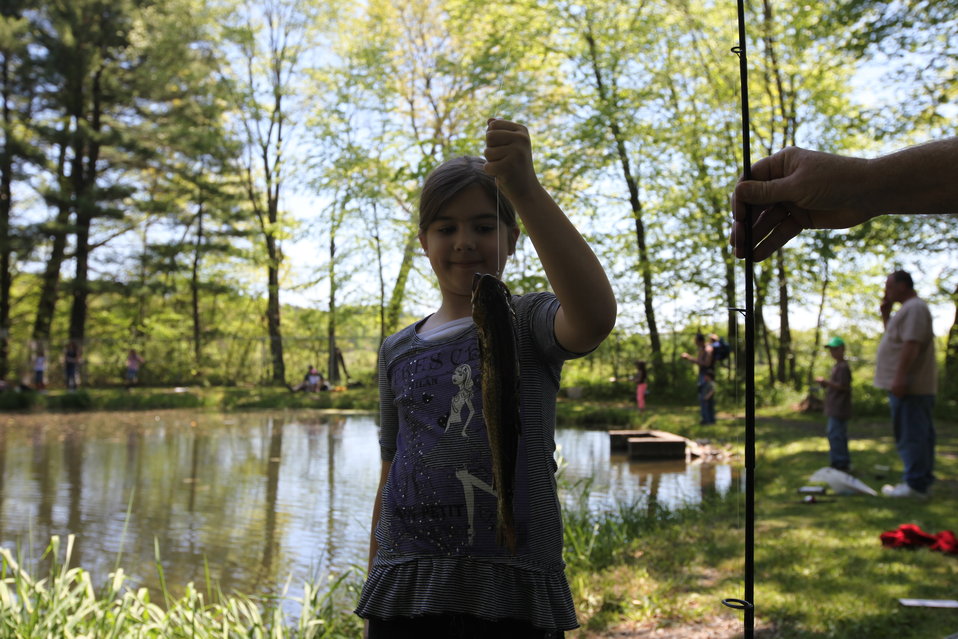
Youth Fishing Derby 2012

Megan Nagel/USFWS